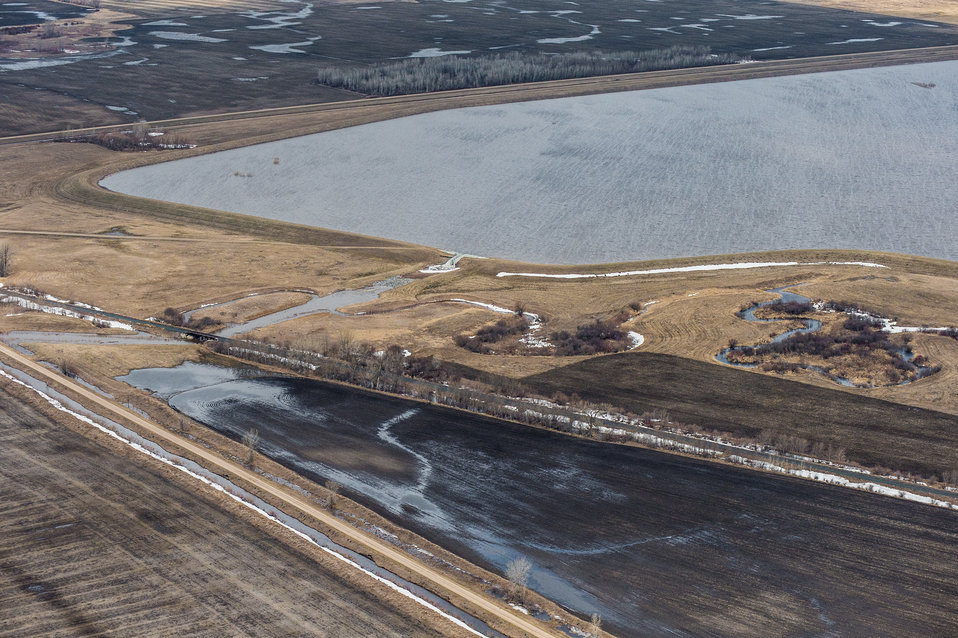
Outlet structure on Warren Watershed Off channel storage site in Marshall County, MN, Wednesday, May 1, 2013. For information about this and other programs from the USDA Red River Basin Initiative (RRBI) please see www.mn.nrcs.usda.gov/news/features13/RRBI.html.